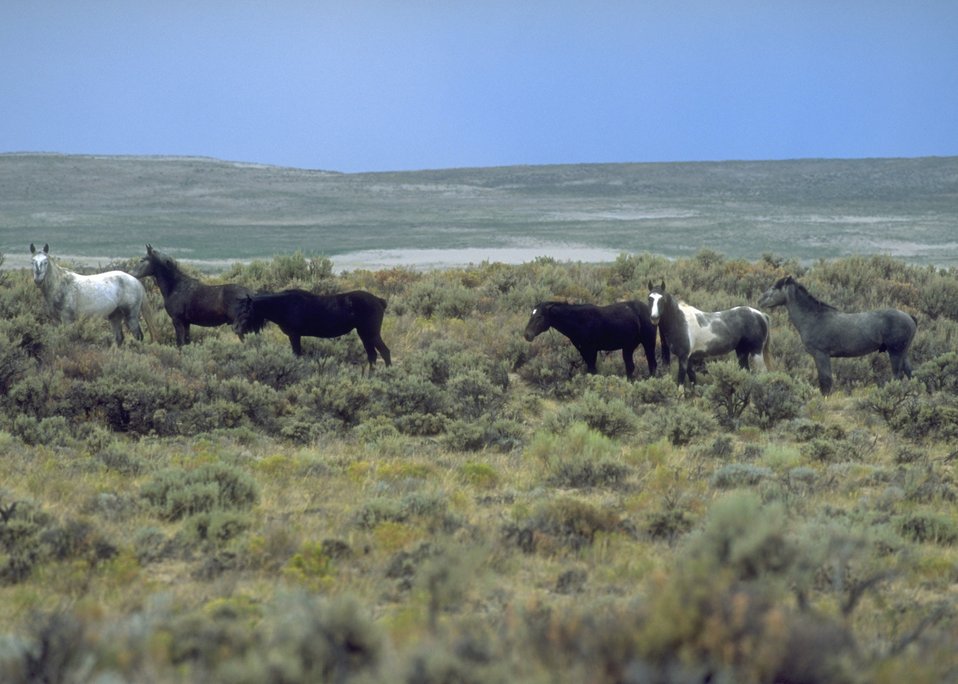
Wild horses, Rock Springs Field Office.